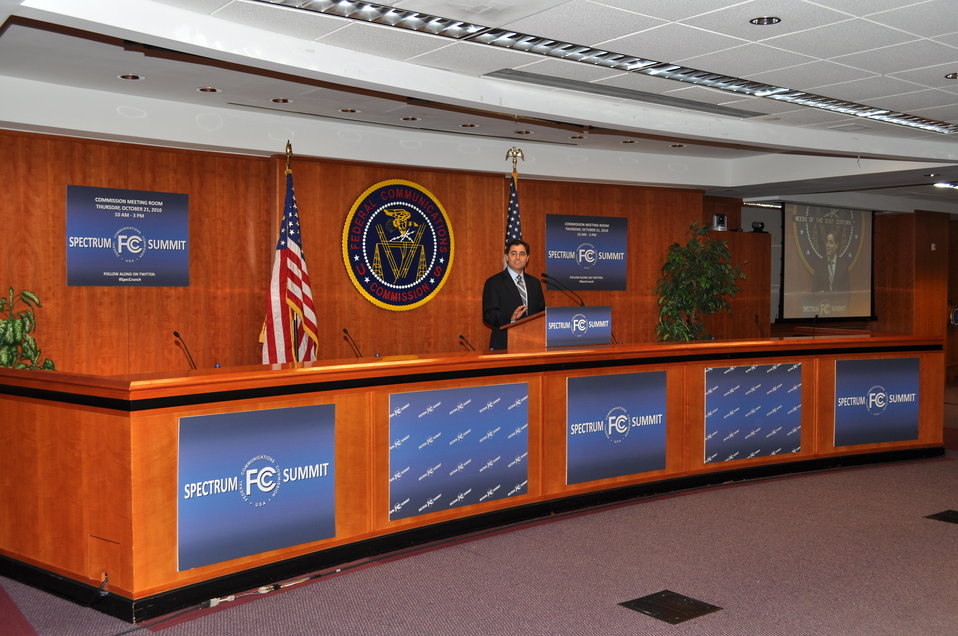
Spectrum Summit